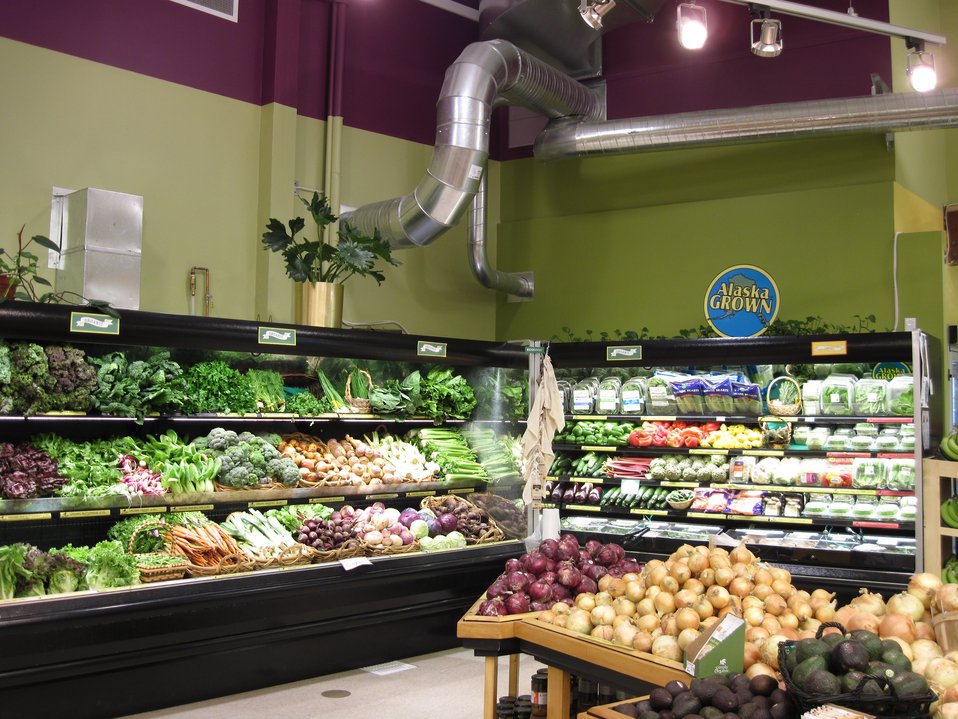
Fairbanks Coop Market 1

The produce section at the new cooperative market is Alaska’s first member-owned community grocery store is open for business and is filled with fresh, healthy food. The Fairbanks Community Cooperative Market was partially funded by the U.S. Department of Agriculture (USDA) Rural Development (RD) Rural Economic Development Loans and Grants (REDLG) program.